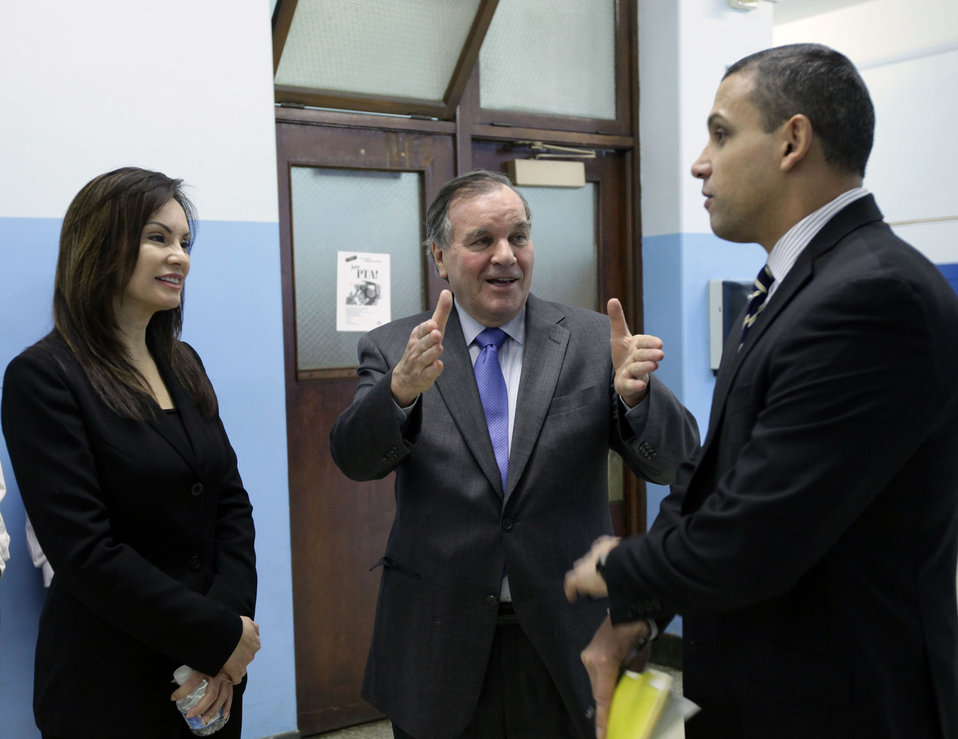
Rios in Chicago: 1/6/10

Treasurer Rios and Mayor Daley with CEO of the Chicago Public Schools Ron Huberman at Rufus M. Hitch Elementary School in Chicago.